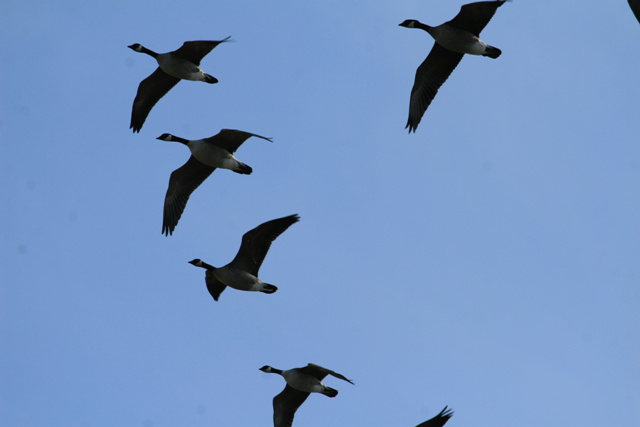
Canada Geese in flight